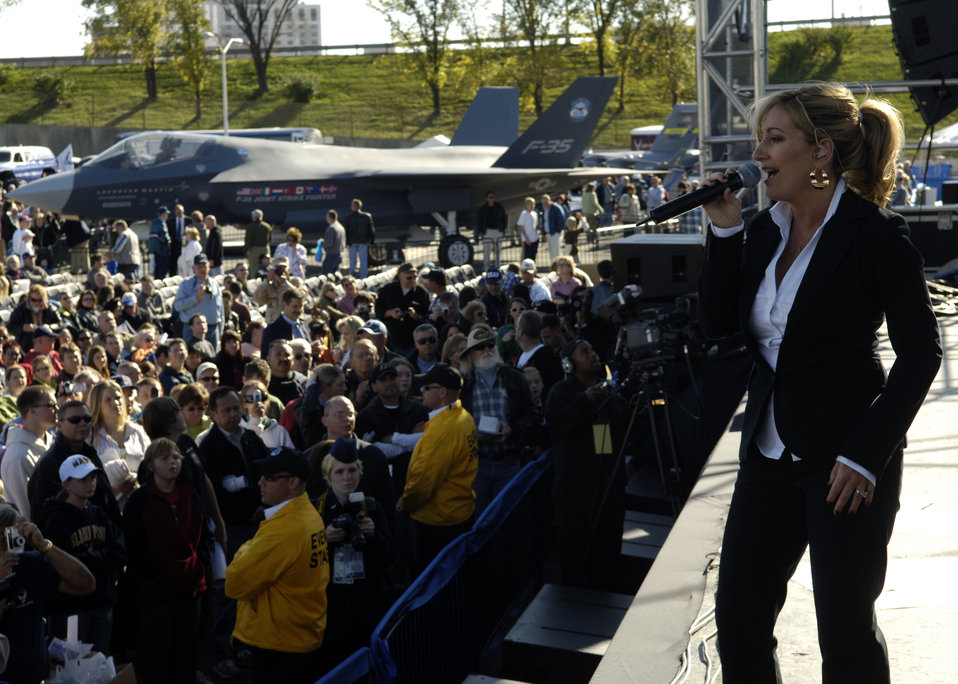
Lee Ann Womack performs

Country music performer Lee Ann Womack performs for more than 25,000 spectators gathered at the Air Force open house at the Pentagon on Saturday, Oct. 14, 2006. The concert followed the official dedication ceremony of the Air Force Memorial.